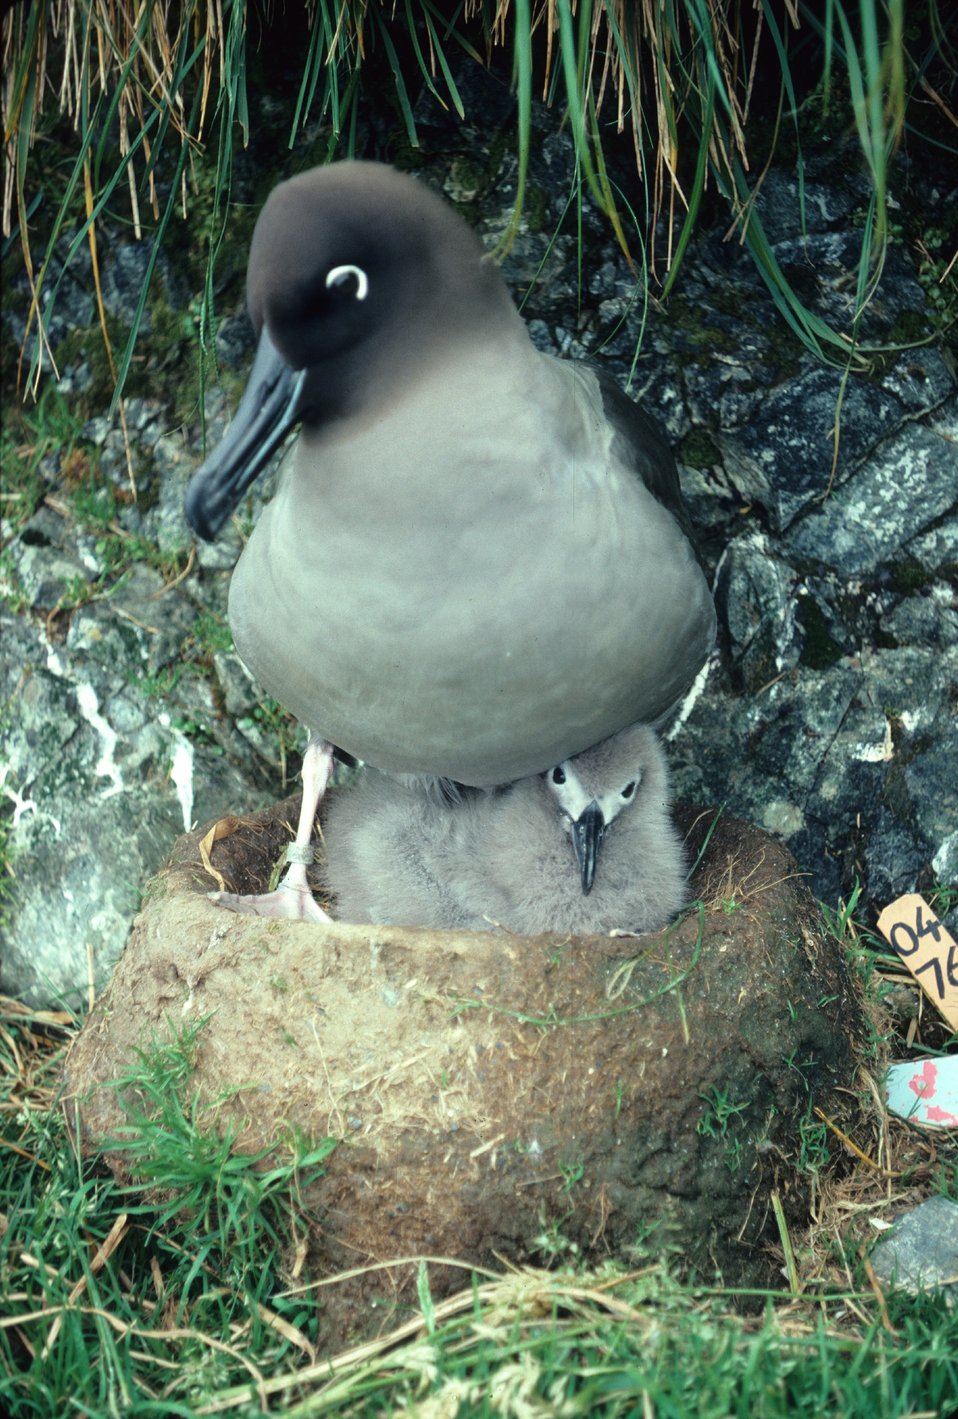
Light mantled sooty albatross & chick.